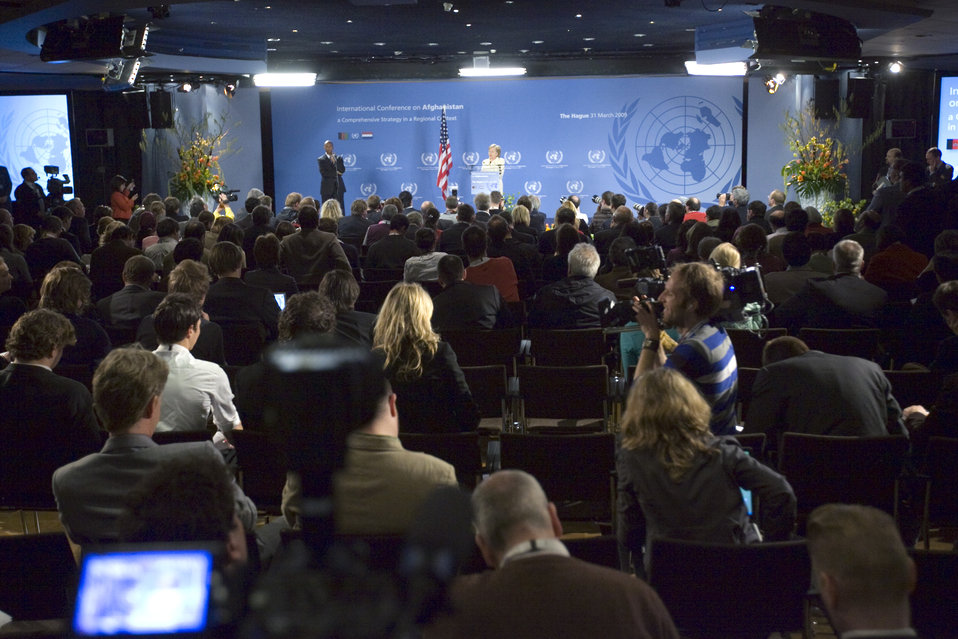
Secretary Clinton Speaks to Press at The Hague

U.S. Secretary of State Hillary Rodham Clinton leads a press conference at the World Forum Convention Centre in The Hague during the International Conference on Afghanistan March 31, 2009. Over 90 countries joined this conference.